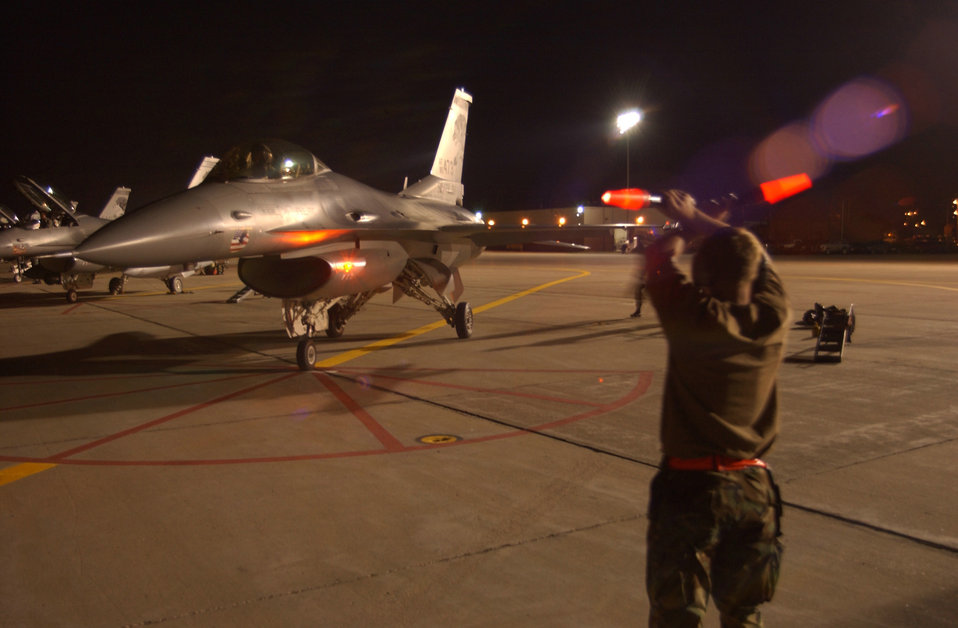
In for the night

SIOUX FALLS, S.D. -- A crew chief guides an F-16C Fighting Falcon into place after completing a night sortie here Sept. 11. The South Dakota Air National Guard's 114th Fighter Wing is conducting night flying missions during their September unit training assembly.